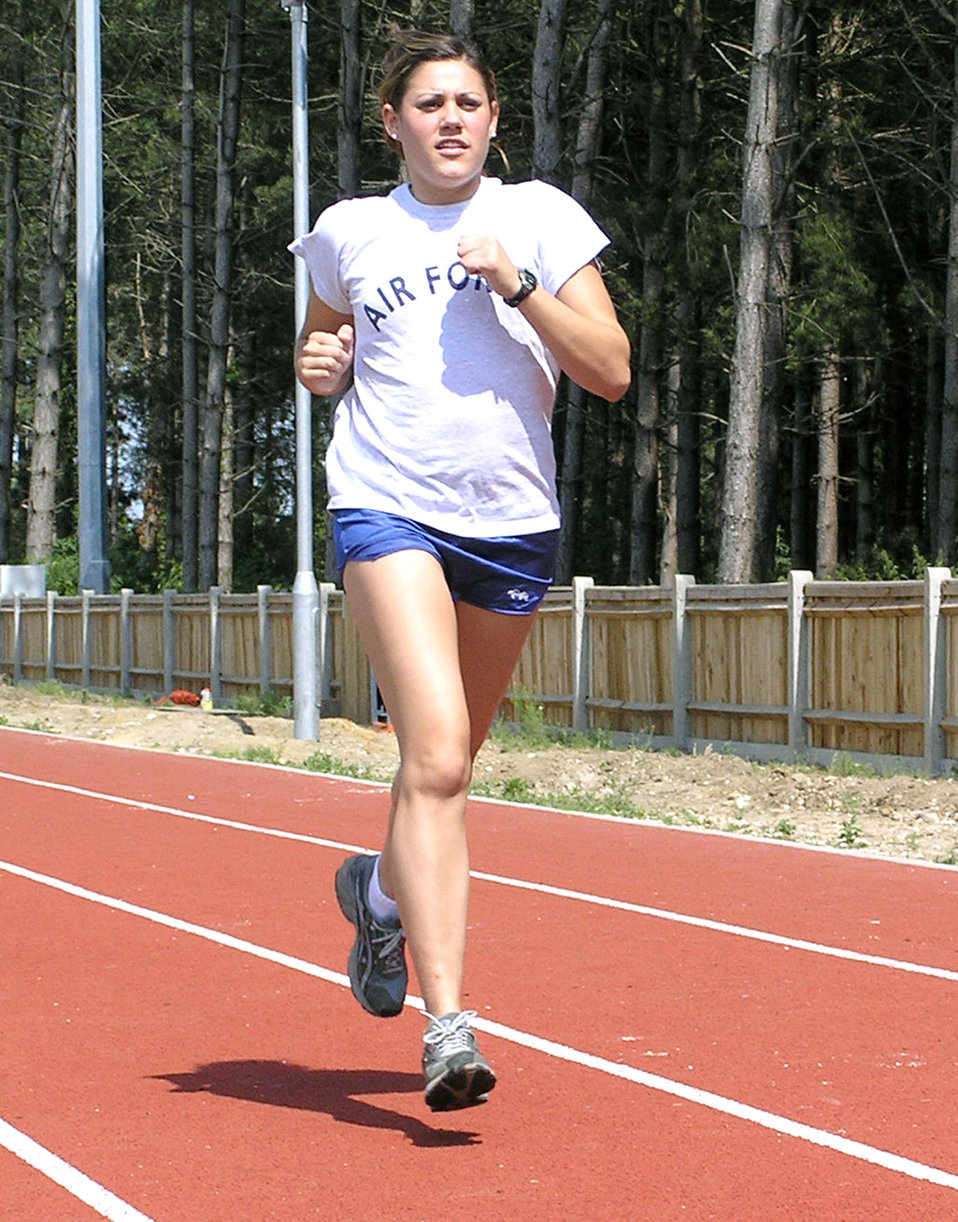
'Mosquito Wing' flies high for Air Force team

Airman Savanna Duchala runs at Royal Air Force Mildenhall, England, as part of her daily training. Duchala is a member of the Air Force Track and Field Team. She is assigned to the 100th Mission Support Squadron military personnel flight.